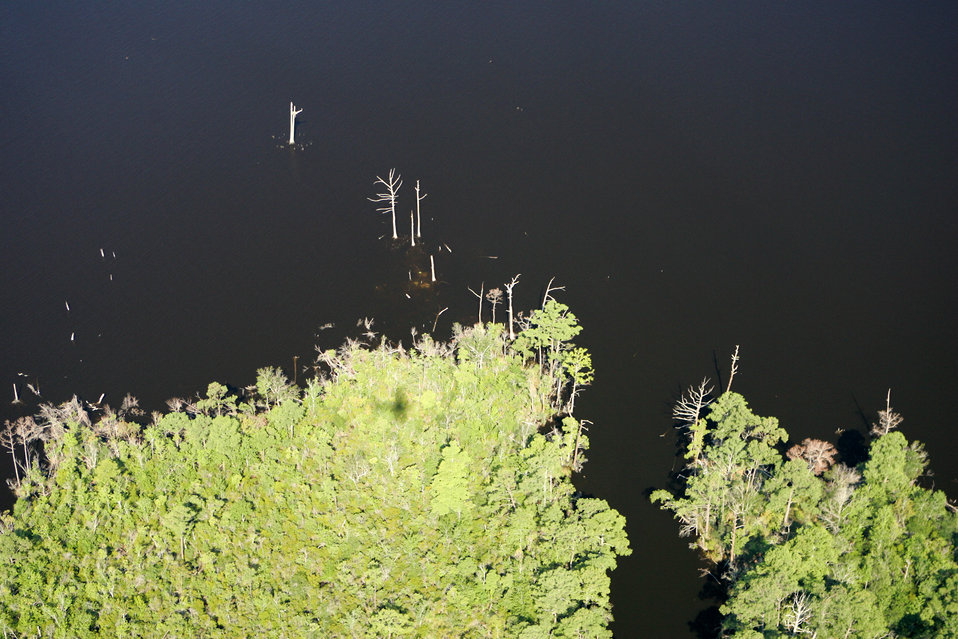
Sea level rise at Alligator River Refuge

An aerial photo shows the impact of sea-level rise at Alligator River National Wildlife Refuge in North Carolina, where salt water intrusion is killing the pond pine pocosin habitat. The warming of the lower atmosphere is causing sea levels to rise.